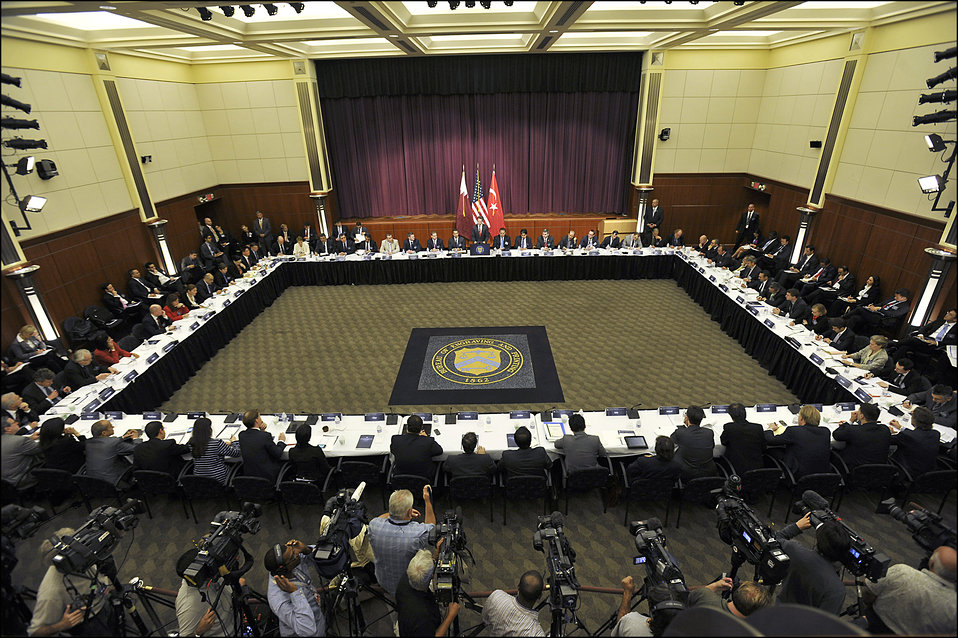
Secretary Geithner speaks before the Friends of Syrian People International Working Group on Sanctions